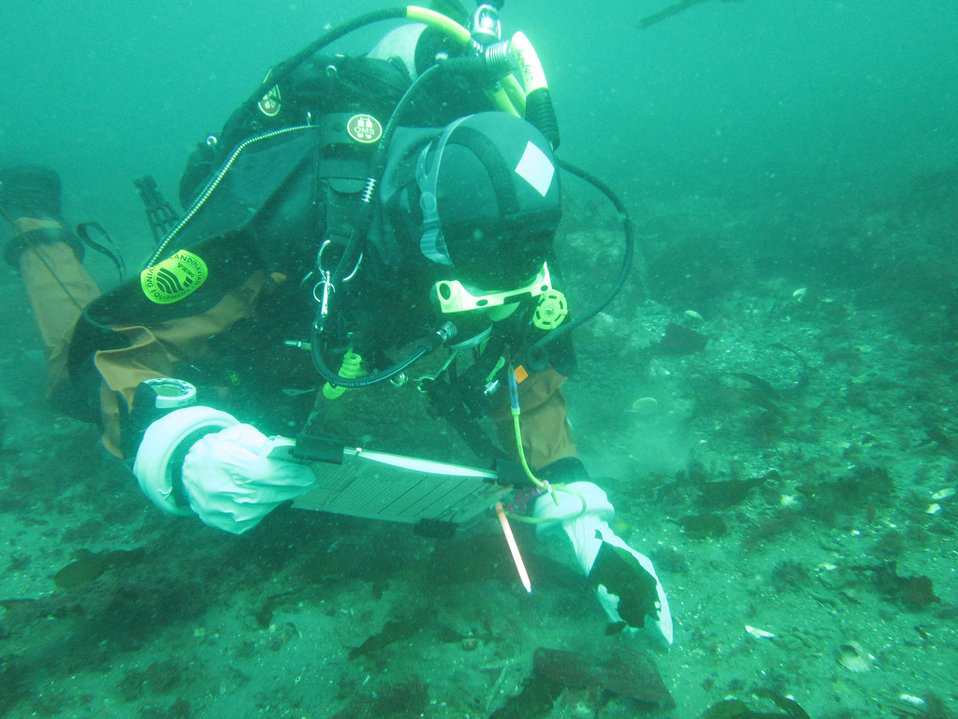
Studying the bottom before the Elwha River dam removal

EPA divers worked with the U.S. Geological Survey (USGS) to study the bottom habitat (benthic conditions) at the mouth of the Elwha River before dam removal.

The removal of the Elwha River dams will affect marine habitats in the Strait of Juan de Fuca, from the flow and deposition of sediment that will have accumulated behind the dams for nearly 100 years.
That sediment can have a variety of effects on marine plants and animals including burial, inhibition of aquatic reproduction, light reduction, damage to animal gills and filter feeding structures, and alteration of species interactions with their different tolerances and responses to the sediment.
Elwha nearshore communities will continue to be surveyed during and after dam removal. Measuring community responses to short and long term changes in deposited and suspended sediments offers an unprecedented opportunity to gain insight relevant to managing these important marine resources.